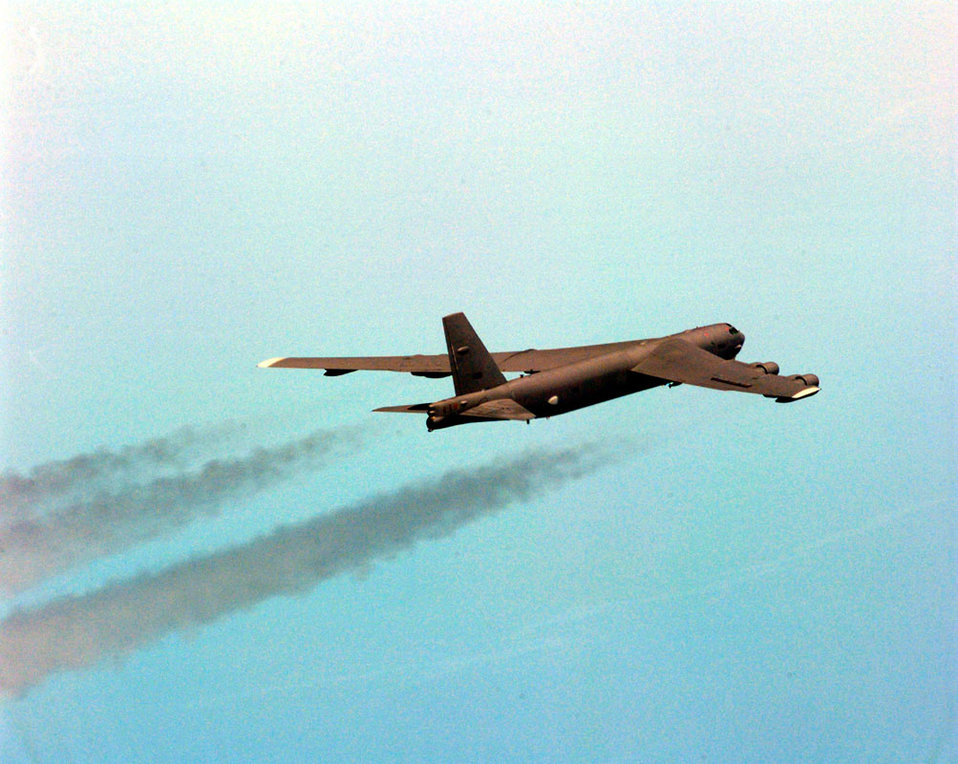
Combat mission

FILE PHOTO -- A B-52H Stratofortress of the 2nd Air Expeditionary Group, Royal Air Force Fairford, England, heads toward a target in Kosovo during a NATO Operation Allied Force Combat Penetration mission. The 2nd AEG is made up of B-52H aircraft and crews from the 2nd and 5th Bomb Wings. The 2nd BW is home- based at Barksdale Air Force Base, La., while the 5th BW is based at Minot AFB, N.D.